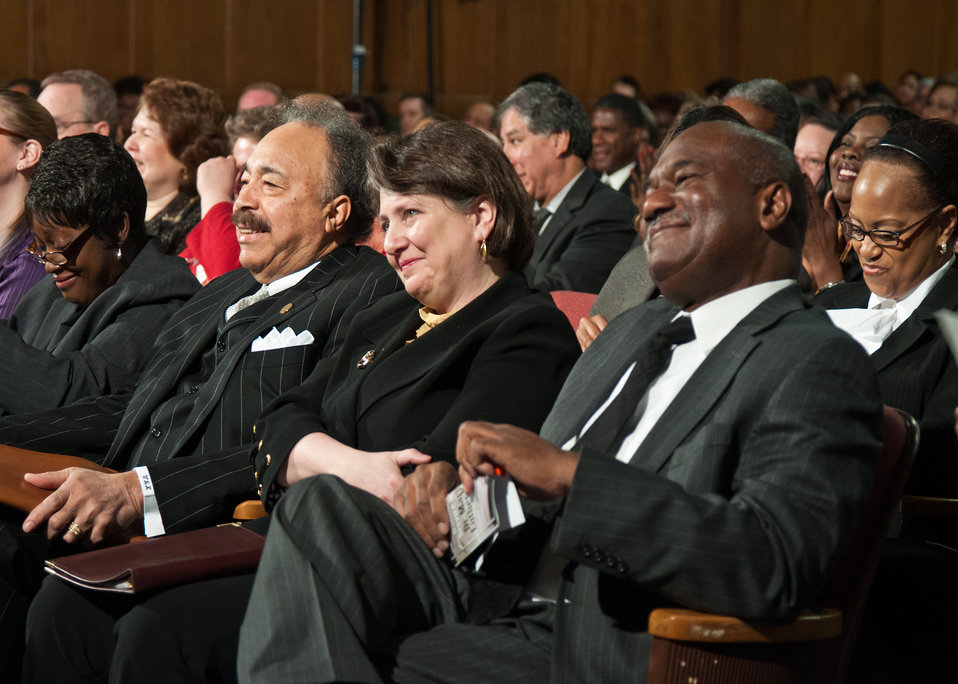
From left: Dr. William R. Harvey, President, Hampton University, Hampton, Virginia, Dr. Kathleen Merrigan, Agriculture Deputy Secretary and Pearlie Reed, Assistant Secretary for Administration listen to Max Finberg, Director, Faith Based and Neighborhood Partnerships, Master of Ceremonies presentation of Dr. Martin Luther King’s life and lessons during the National Service Day and Martin Luther King Celebration in honor of Dr. Martin Luther King Jr.’s contributions to the Civil Rights Movement at the United States Department of Agriculture in Washington, D.C., on Thursday, January 12, 2012.